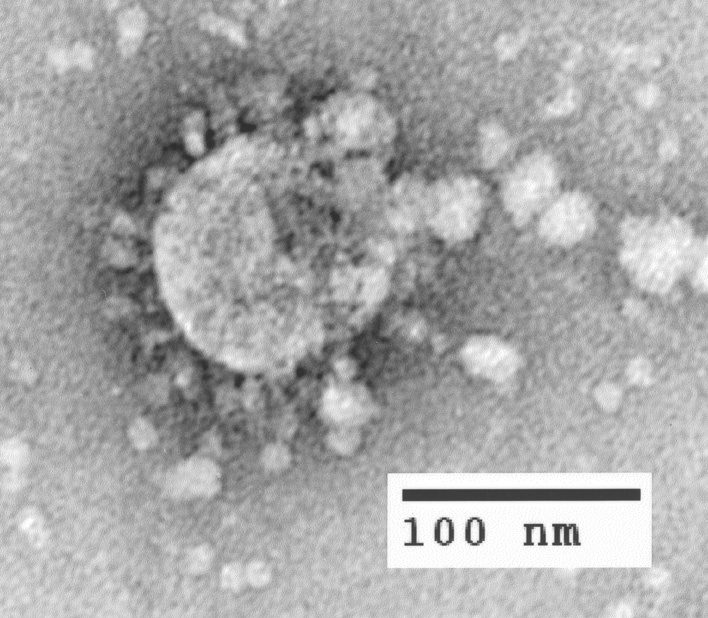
Coronaviruses are a group of viruses that have a halo or crown-like (corona) appearance when viewed under a microscope.